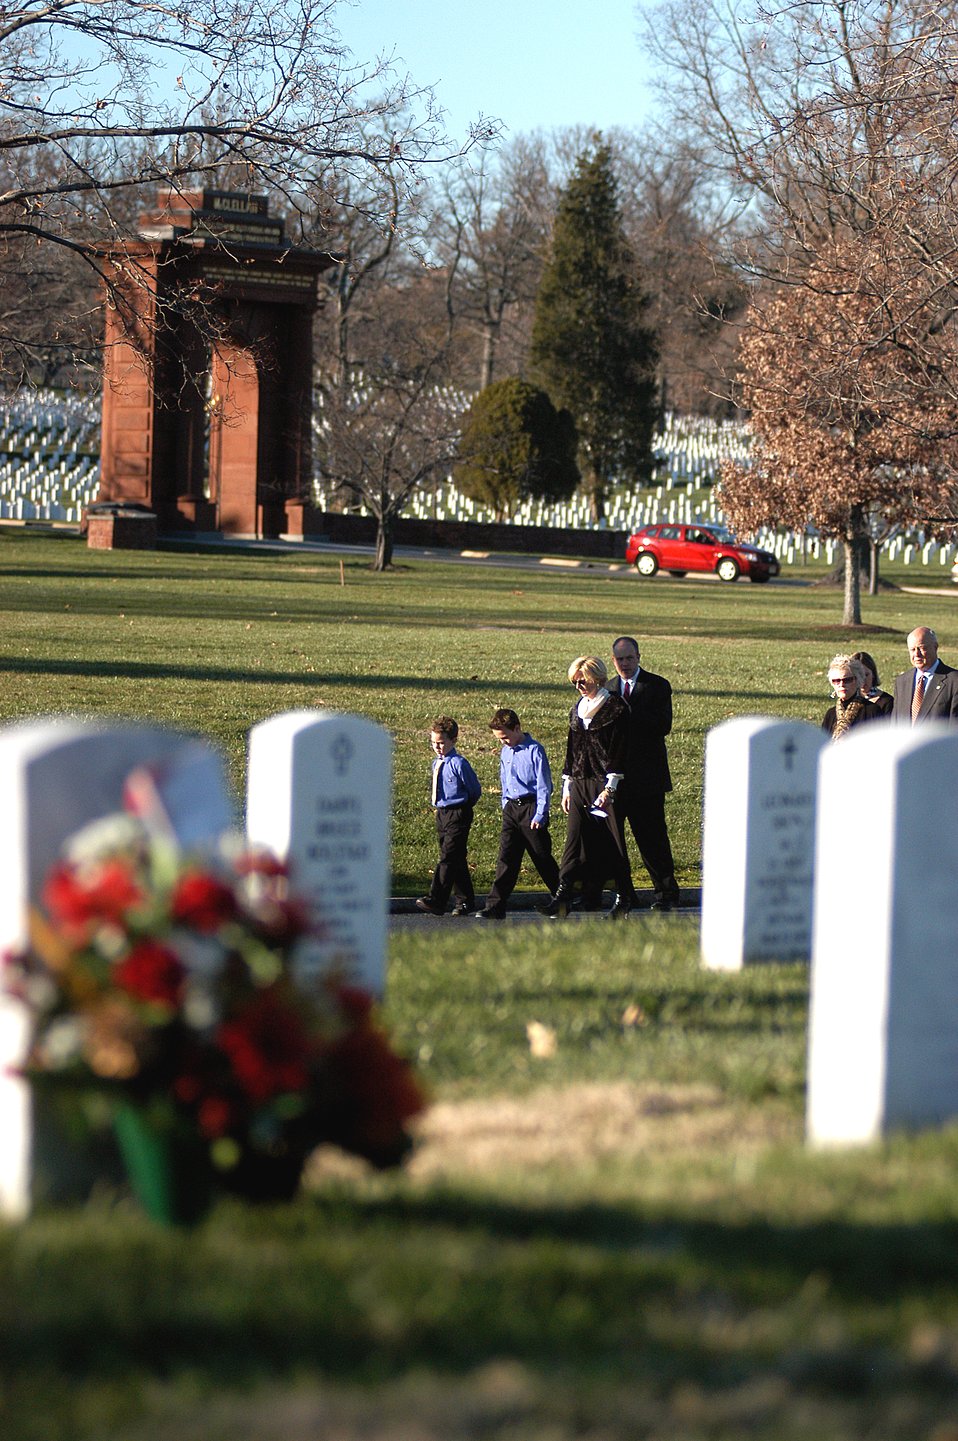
Laid to rest

The family of Maj. Troy Gilbert walk to the grave site during a full honors funeral Dec. 11 at Arlington National Cemetery. Major Gilbert was the pilot of an Air Force F-16 Fighting Falcon engaged in support of coalition ground combat operations that crashed approximately 20 miles northwest of Baghdad Nov. 27. Major Gilbert was assigned to the 309th Fighter Squadron, Luke Air Force Base, Ariz., and was deployed to the 332nd Expeditionary Wing, Balad Air Base, Iraq.